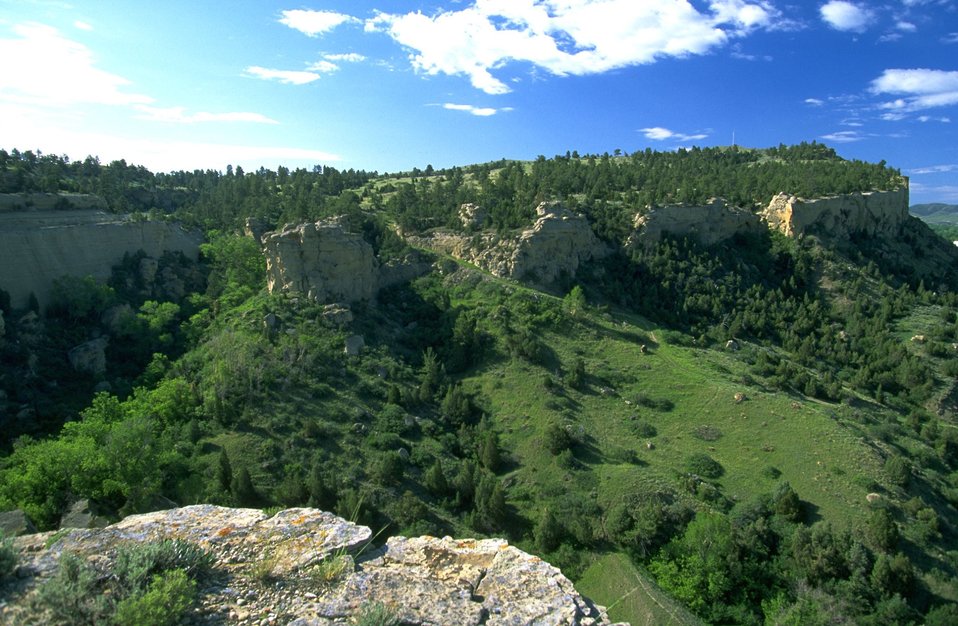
Sandstone cliffs in the Four Dances Natural Area east of Billings. A trail decending to the Yellowstone River can be seen to the right.